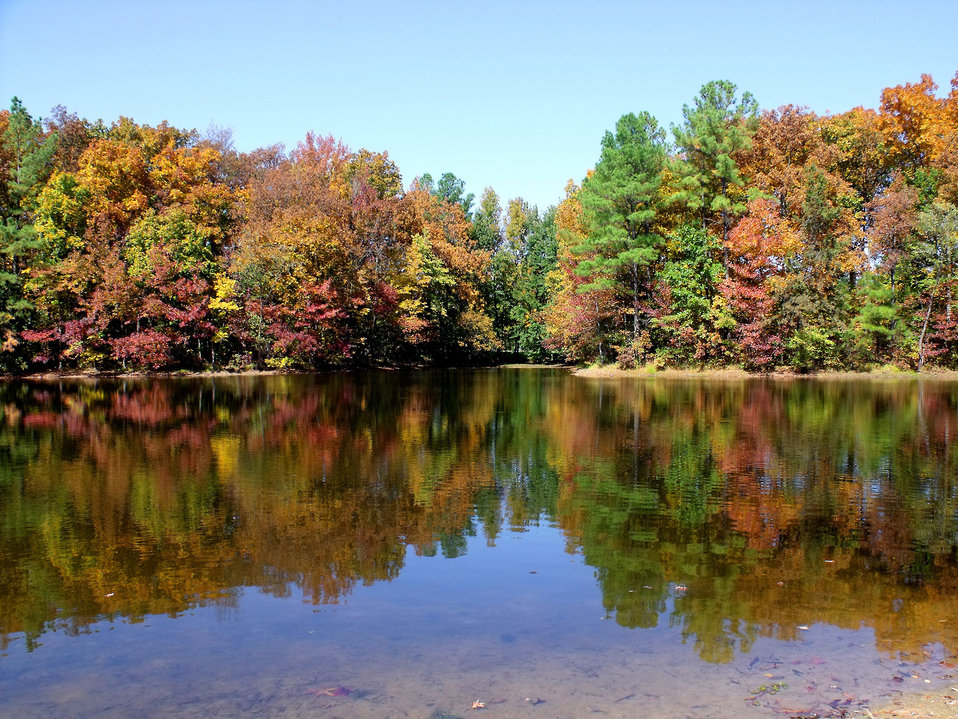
Lake and trees.